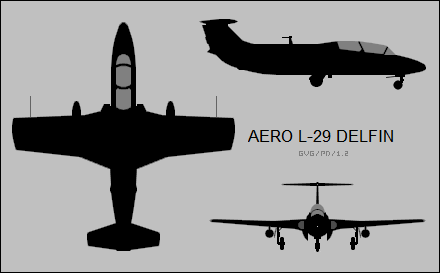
3-view silhouettes of the Aero L-29 Delfin